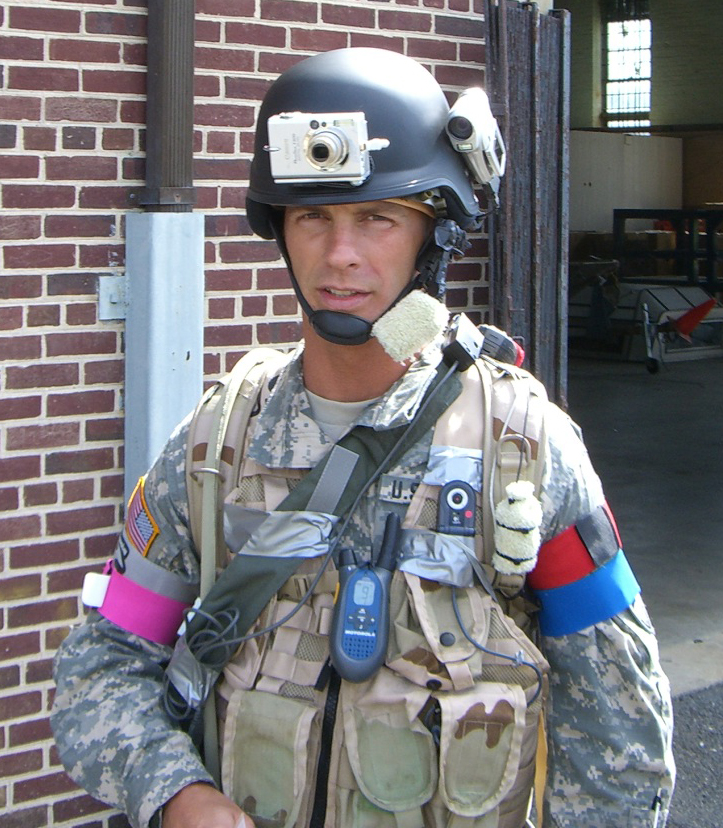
Soldiers with Sensors

Future combat gear may feature wearable sensors, including cameras and audio pick-ups, to enhance the soldier's 'situational awareness' and after-action reports as a result of the ASSIST project.